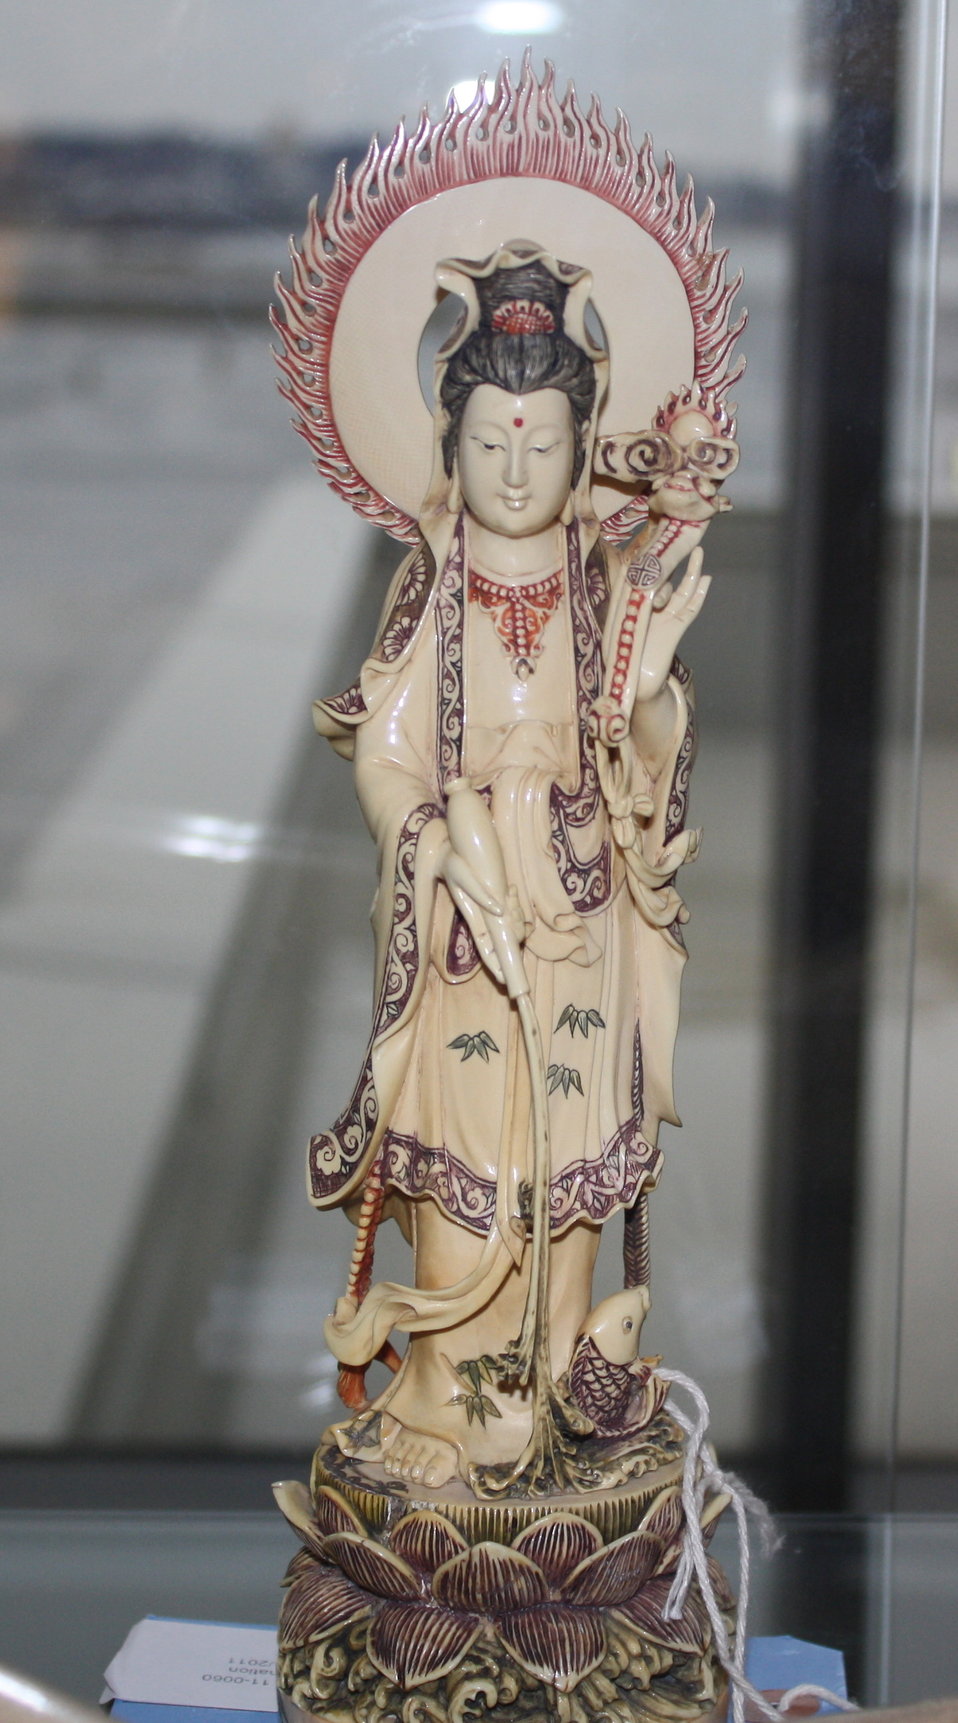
Elephant Ivory Statue